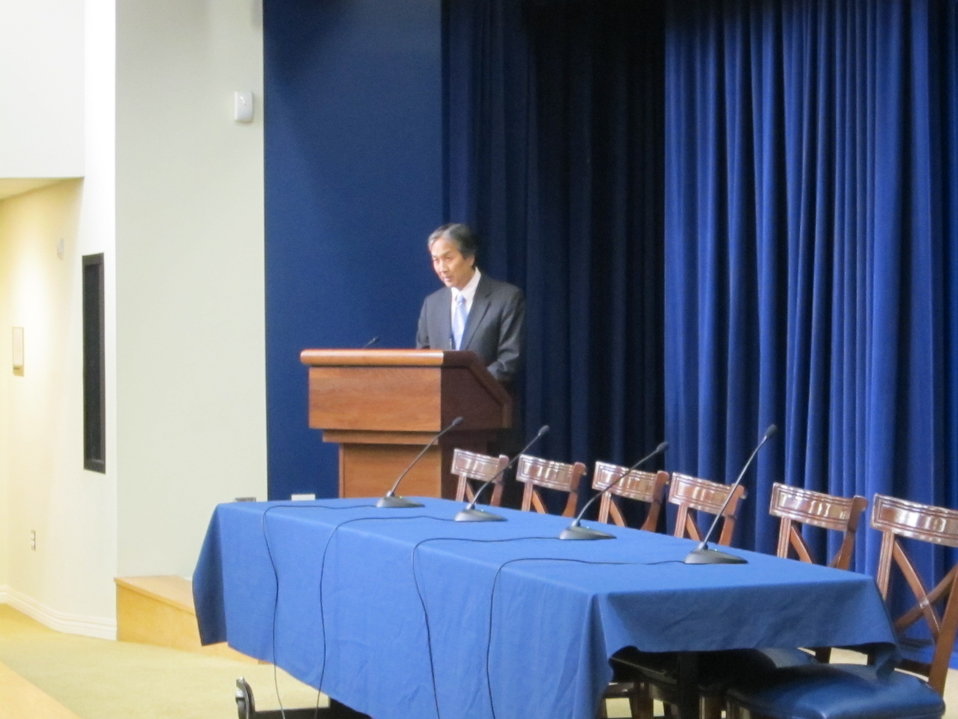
WH 2012 World Hepatitis Day Event